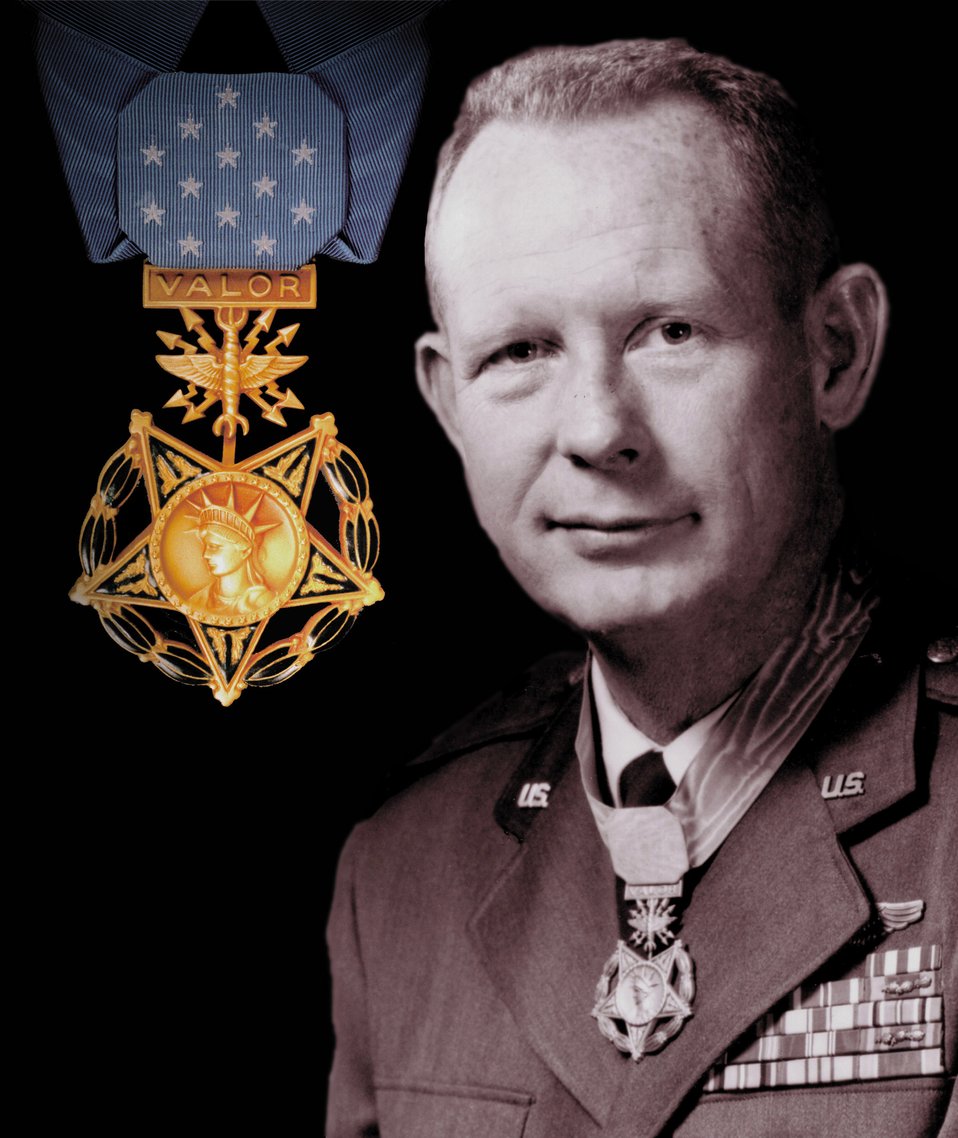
A true hero

Retired Col. Bernard F. Fisher was the first living recipient of the U.S. Air Force Medal of Honor. Colonel Fisher received the Medal of Honor for heroism during the Vietnam War.